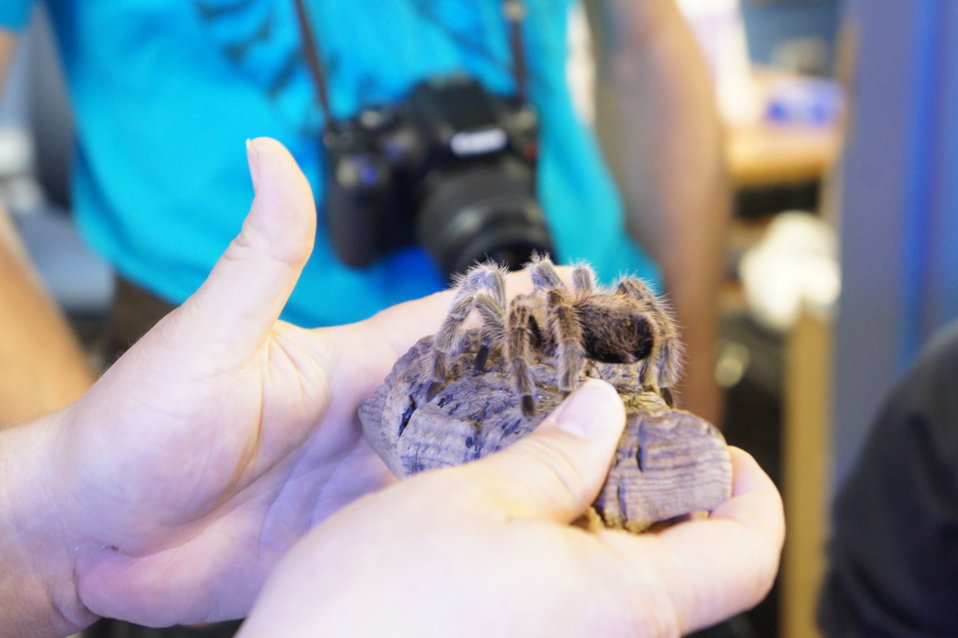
Tarantula at the Smithsonian National Zoo

A biologist at the Smithsonian National Zoo displays a tarantula.